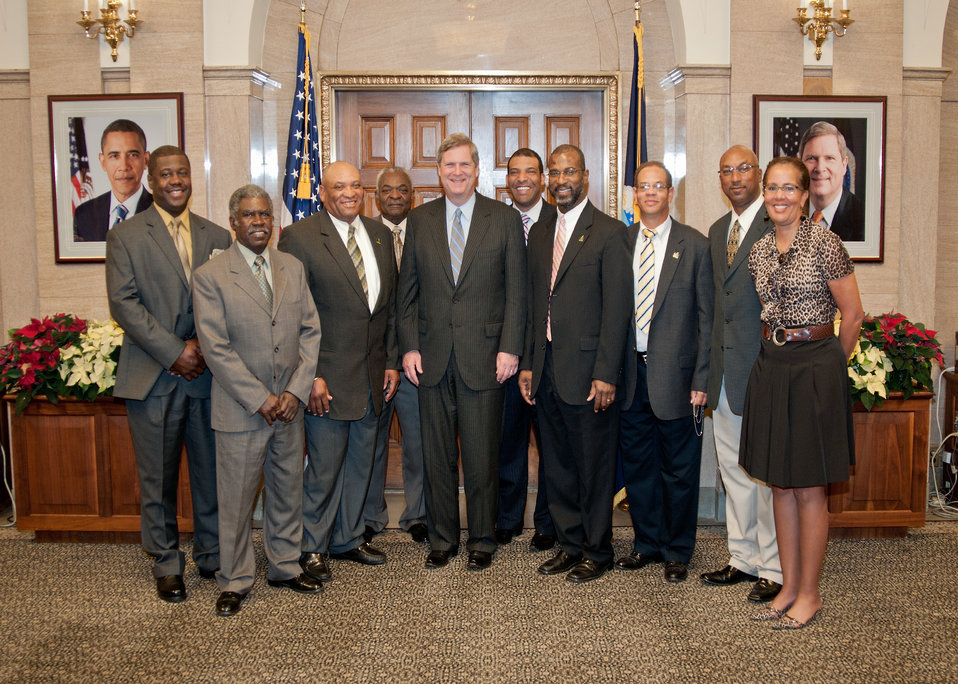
20111129-OSEC-RBN-National Black Grower's Council

Members of the National Black Grower’s Council met with Agriculture Secretary Tom Vilsack at the United States Department of Agriculture in Washington, DC, Tuesday, November 29, 2011. From left: Haywood Harrell, North Carolina, Dexter Gilbert, Harper Armstrong, Louisiana, J.D. Jacobs, Texas, Secretary Tom Vilsack, P.J. Hayne, Virginia, DeWayne Goldman, Arkansas, Bill Bridgefork, Alabama, Warren James, Georgia and Kim Davis, Alabama. Secretary Vilsack and the council discussed national and international agriculture topics.